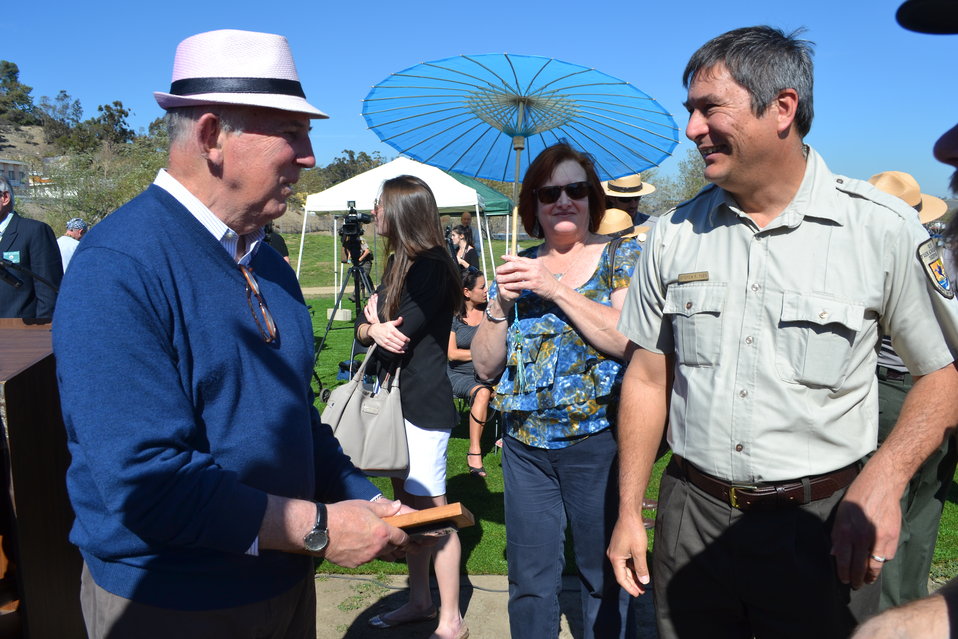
SOI Sally Jewell Visit to LA

Director for the Friends of the LA River, Lewis MacAdams.